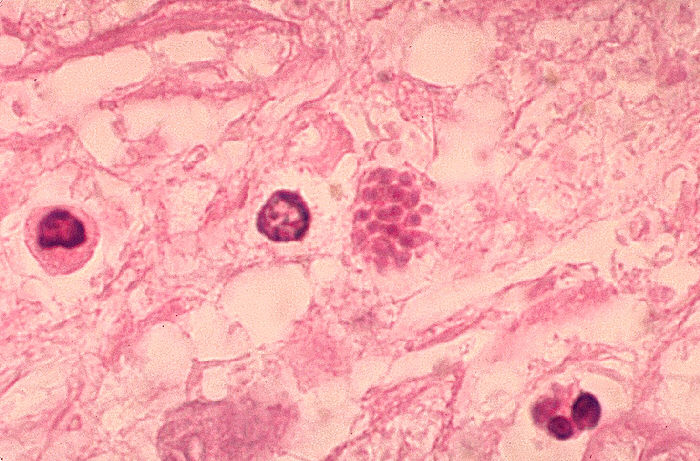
Histopathology of toxoplasmosis of brain in fatal AIDS.